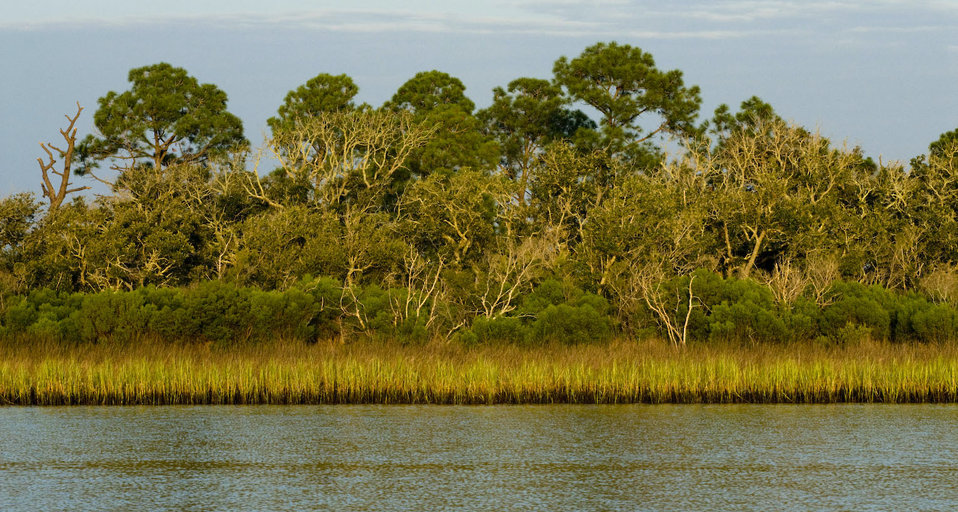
Grand Bay landscape

More frequent storm surge flooding and permanent inundation of coastal ecosystems and communities is likely in low-lying areas, particularly along the central Gulf Coast where the land surface is sinking, according to “A State of Knowledge Report” from the U.S. Global Change Research Program. This barrier island is part of the Grand Bay National Wildlife Refuge.